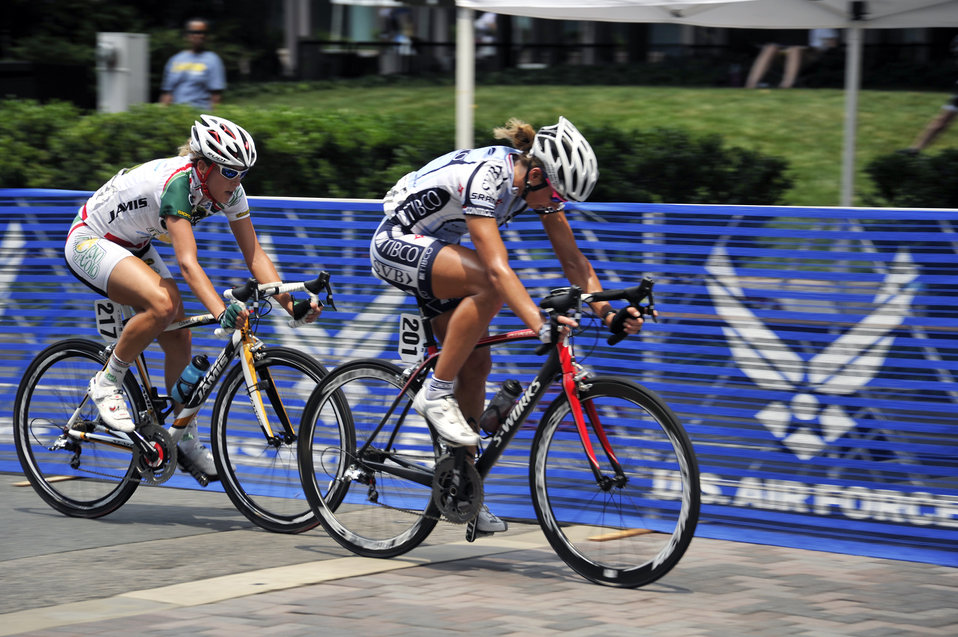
Catch us if you can

Racers fight for points during the Women's Pro race Jun 21 2011, as part of the Air Force Cycling Classic in Crystal City, Va.